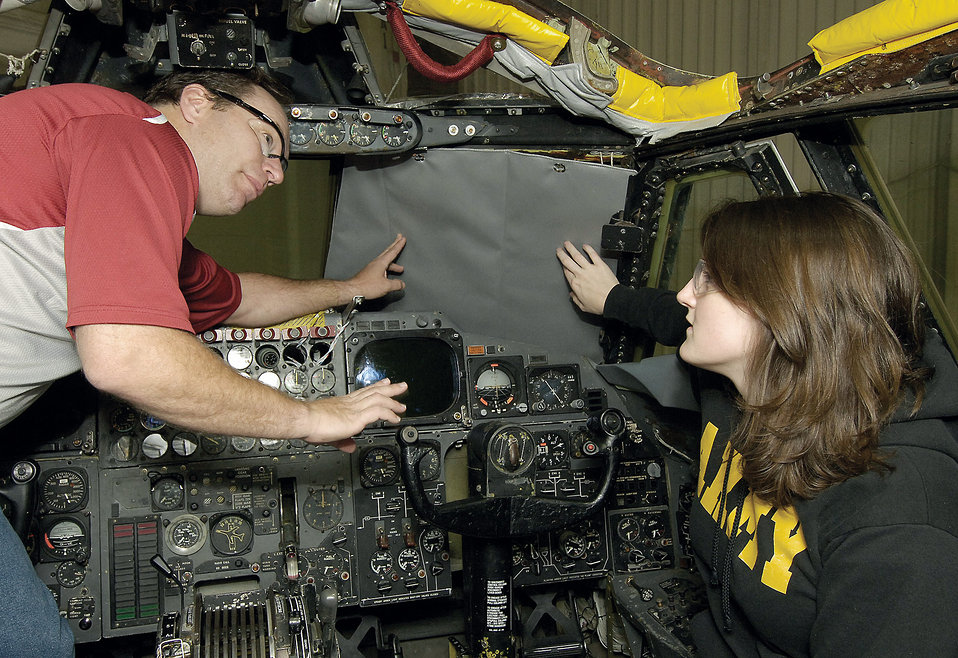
Thermal curtains offer protection to B-52 aircrews

Matthew Yost and Jennifer Hoffman discuss a prototype B-52 Stratofortress thermal curtain they hold in front of a cockpit window Dec. 6 at Tinker Air Force Base, Okla. Reflective on the outside and rubberized on the inside, the curtains will protect aircrews from the blinding light that results from a nuclear explosion. Mr. Yost is a B-52 engineer, and Ms. Hoffman is an engineering intern.